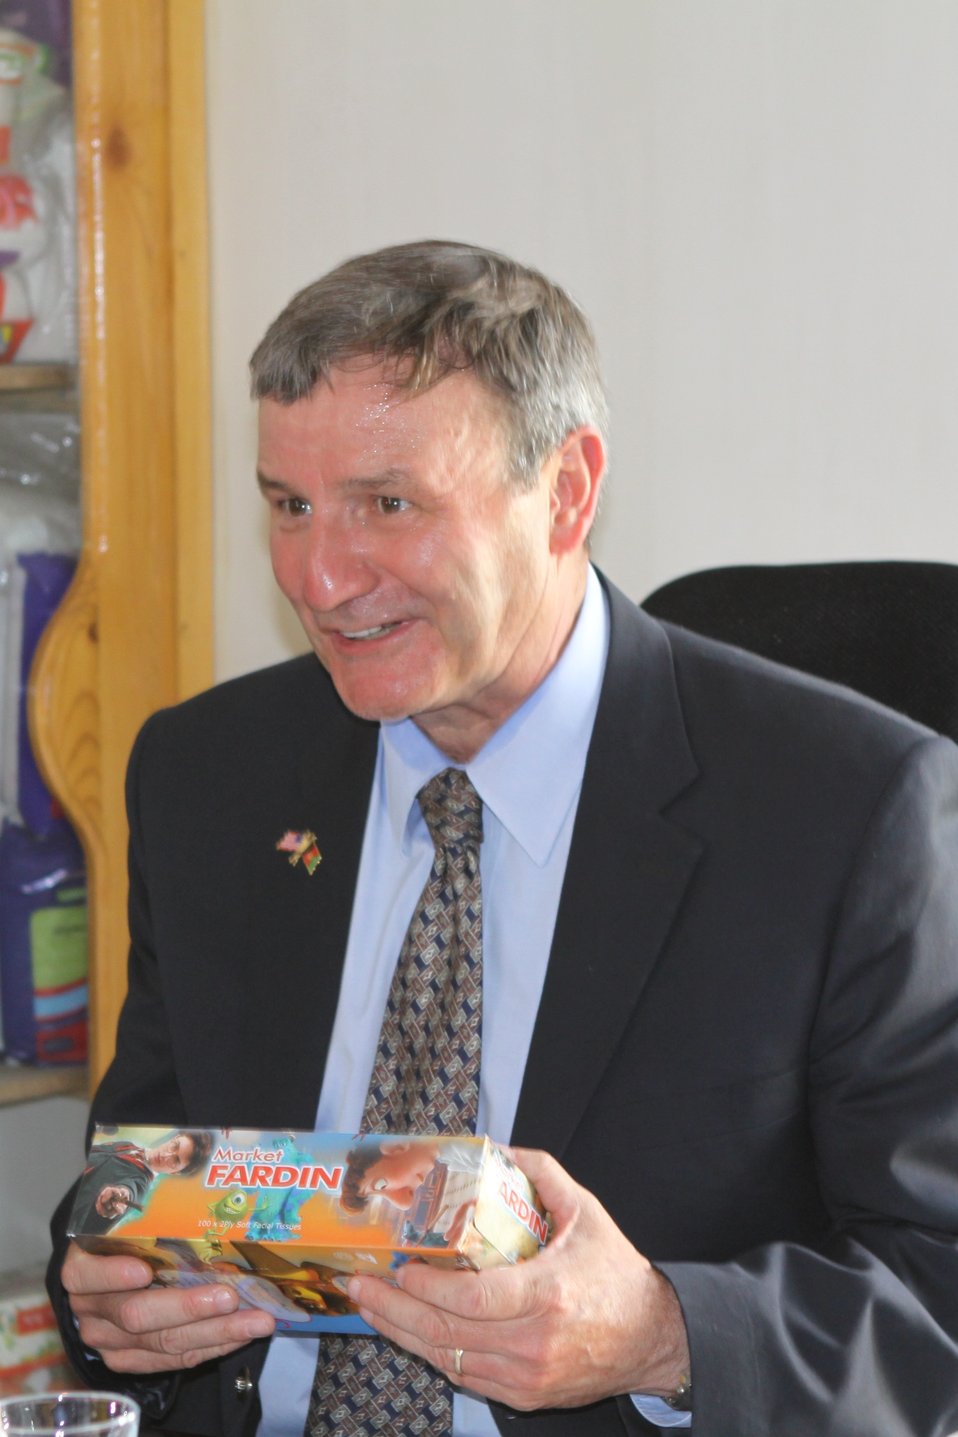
100525 Hirat Marble Conference 854